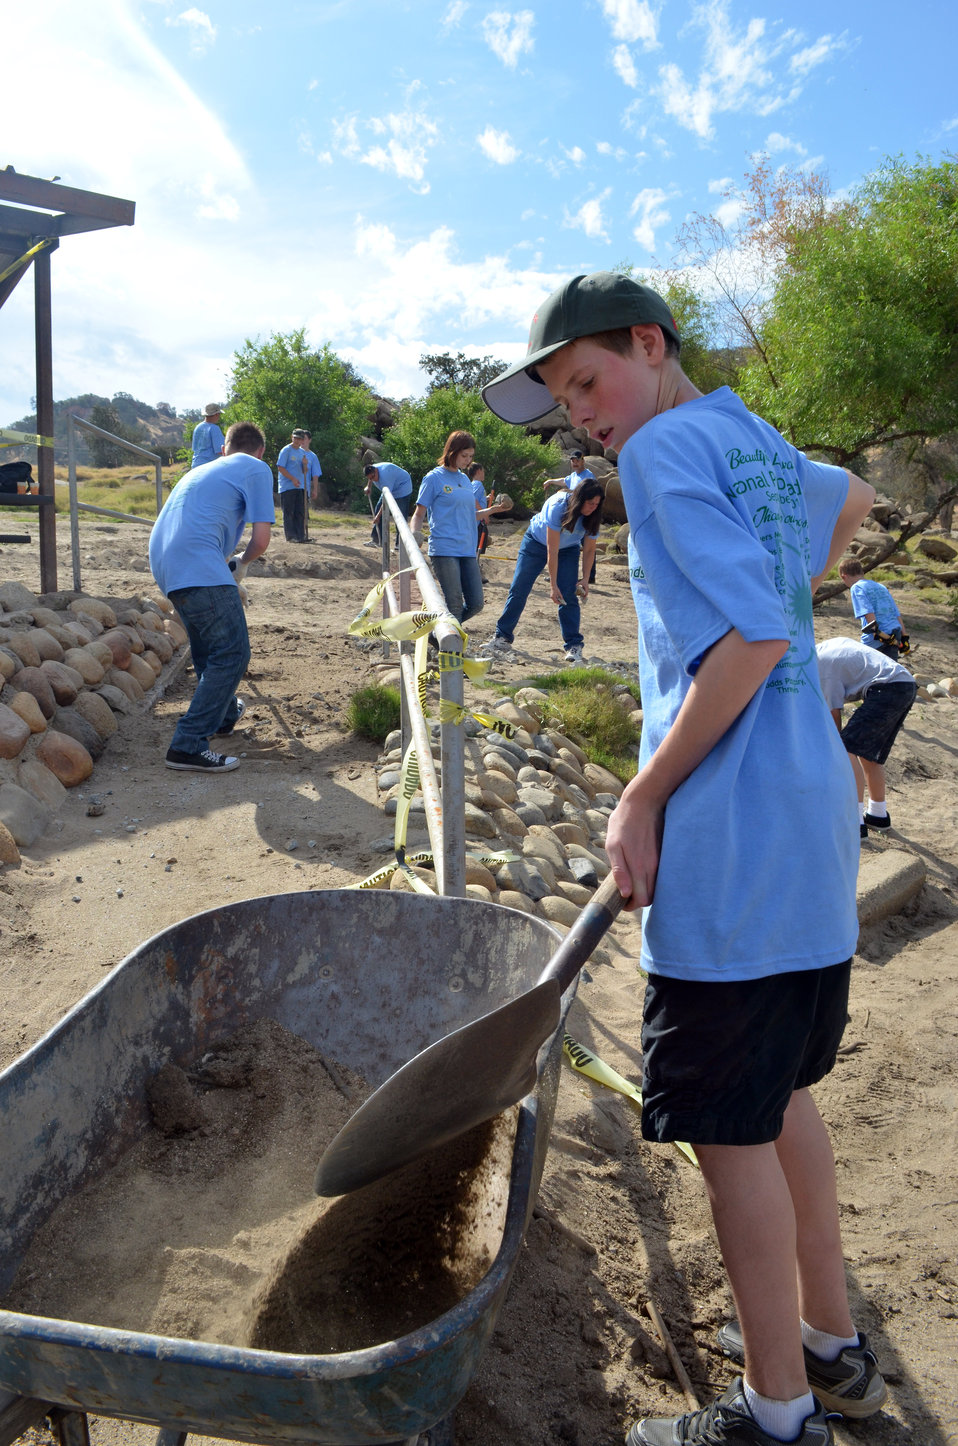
National Public Lands Day at Lake Kaweah

Volunteers from Boys Scout Troop 274 work on a walkway at Lake Kaweah near Lemon Cove, Calif., Sept. 24 in celebration of National Public Lands Day. Around 100 volunteers turned out to help at Lake Kaweah, one of seven U.S. Army Corps of Engineers Sacramento District recreation parks that participated in the event.